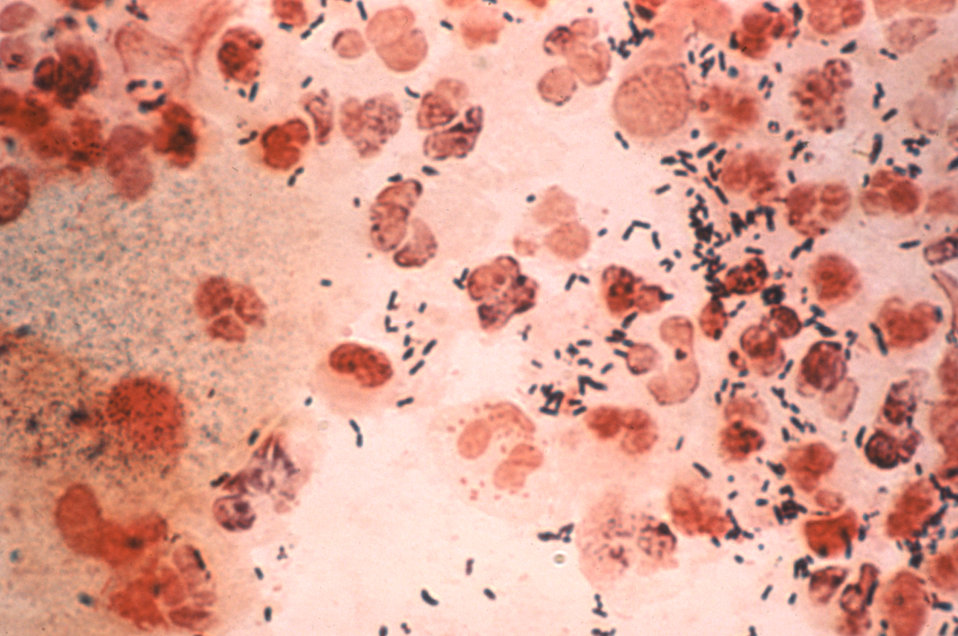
This is a photomicrograph of a rectal smear revealing Neisseria gonorrhoeae, using the Gram-stain technique.